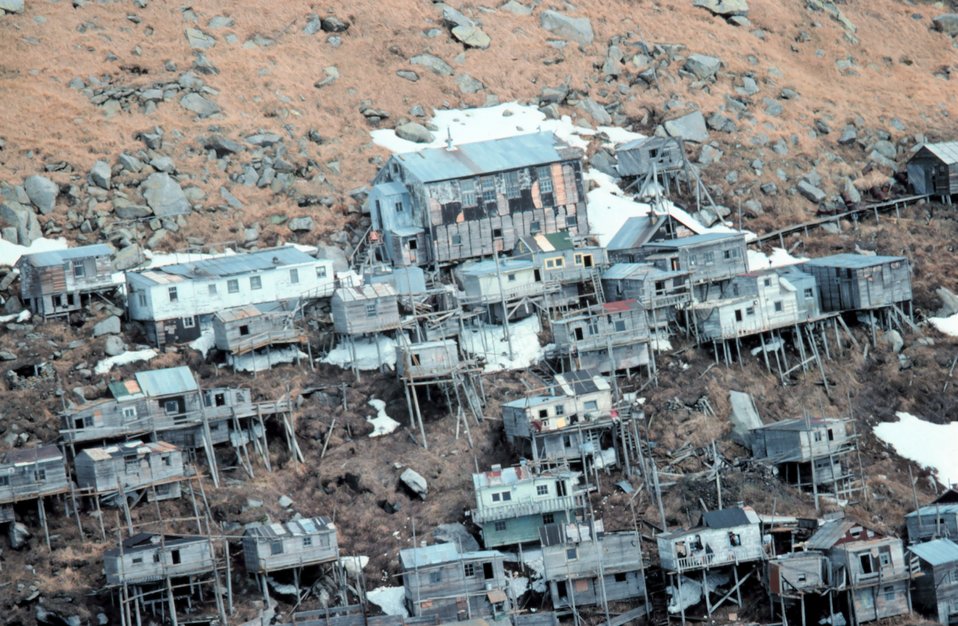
The stilt village of Ukivok - this is now deserted.